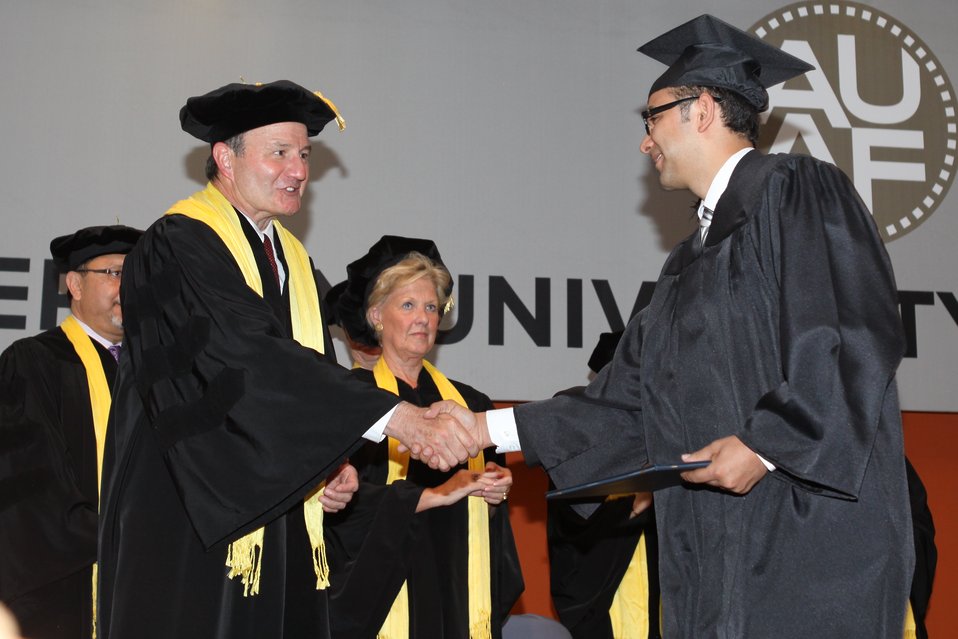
100526 AUAF Graduation 270